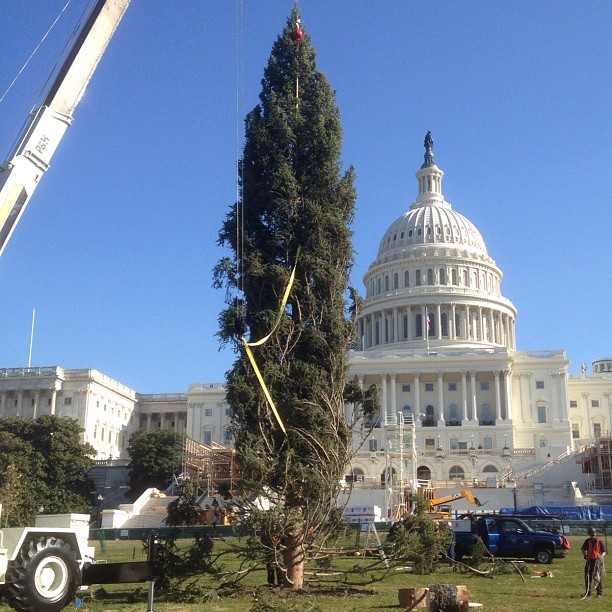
Capitol Christmas Tree now in place. AOC crews now prepare tree for lighting Dec 4, 5 pm.